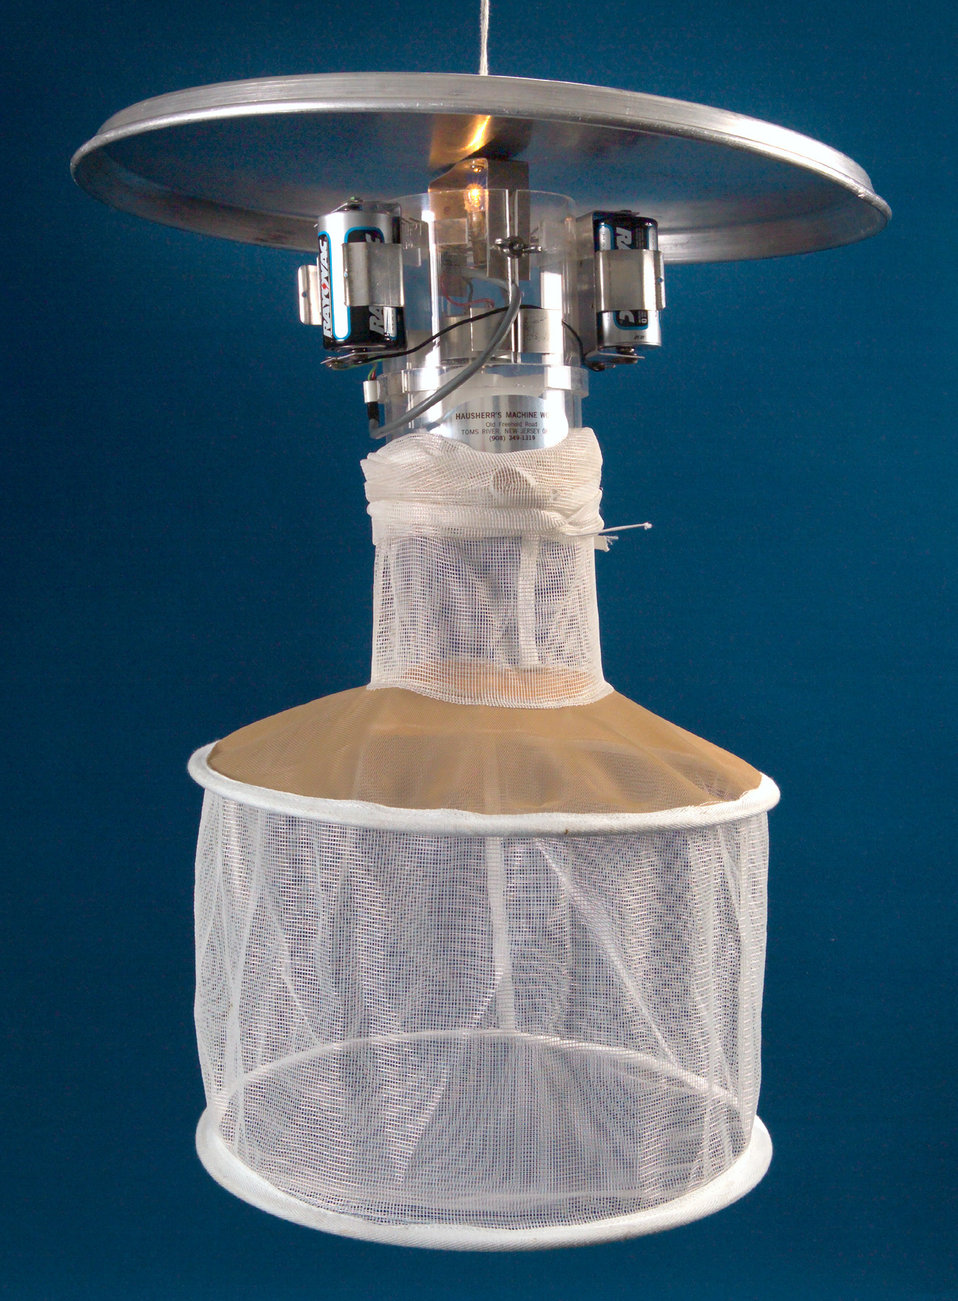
This is a front view of a mosquito light trap used to trap vectors to be tested for the presence of pathogens.